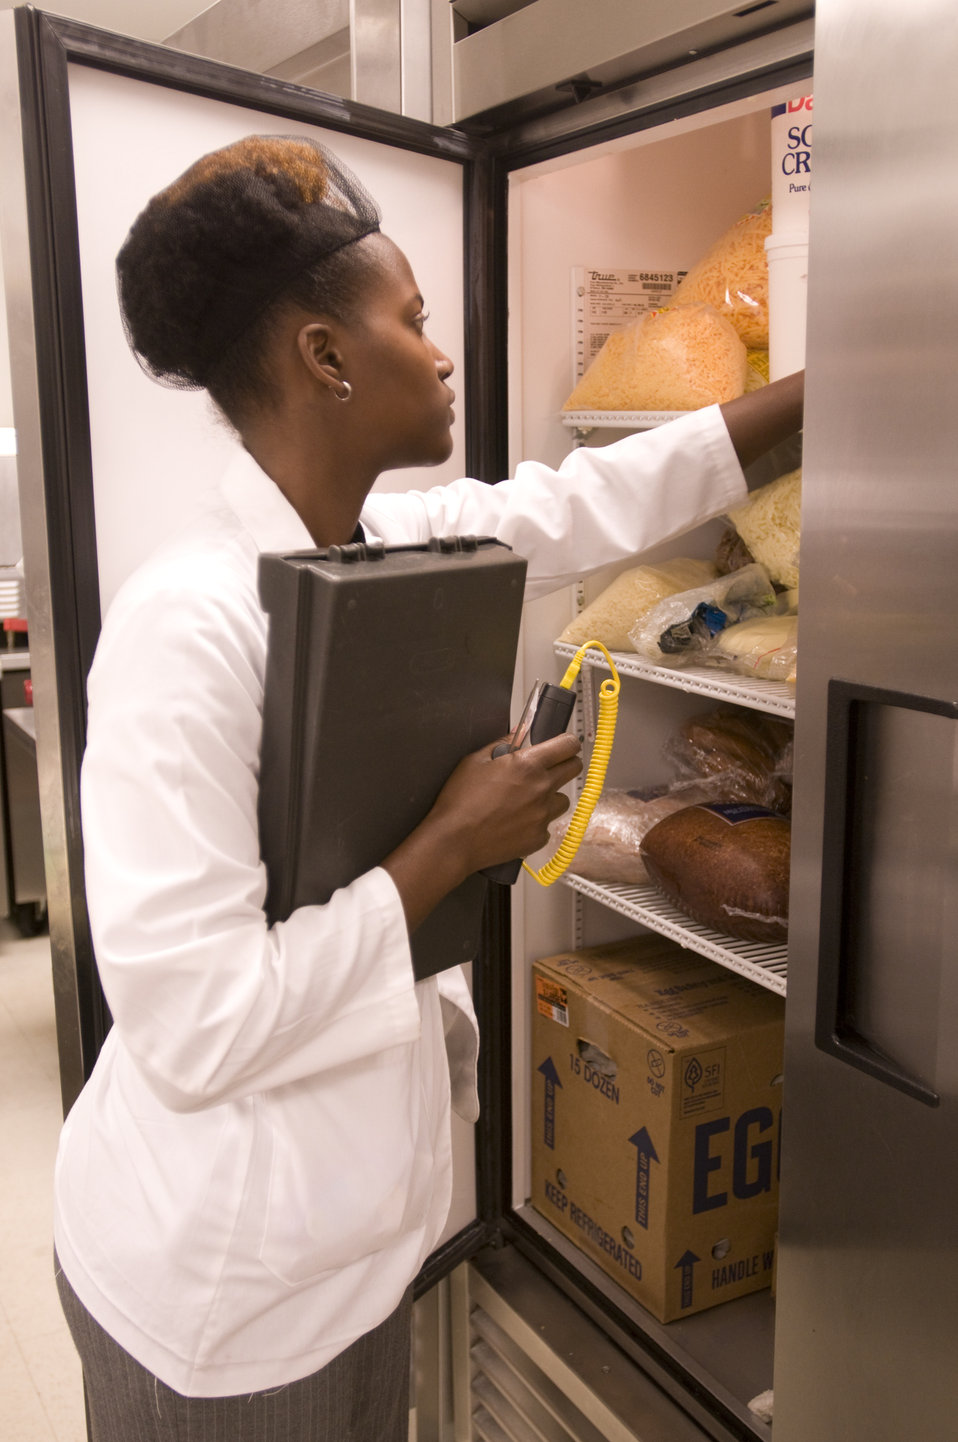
The state-appointed health inspector pictured here at right, was in the process of performing an assessment of this kitchen's sanitary condition. At this point in her inspection, she was about to take some thermal readings of contents within a refrigerator.